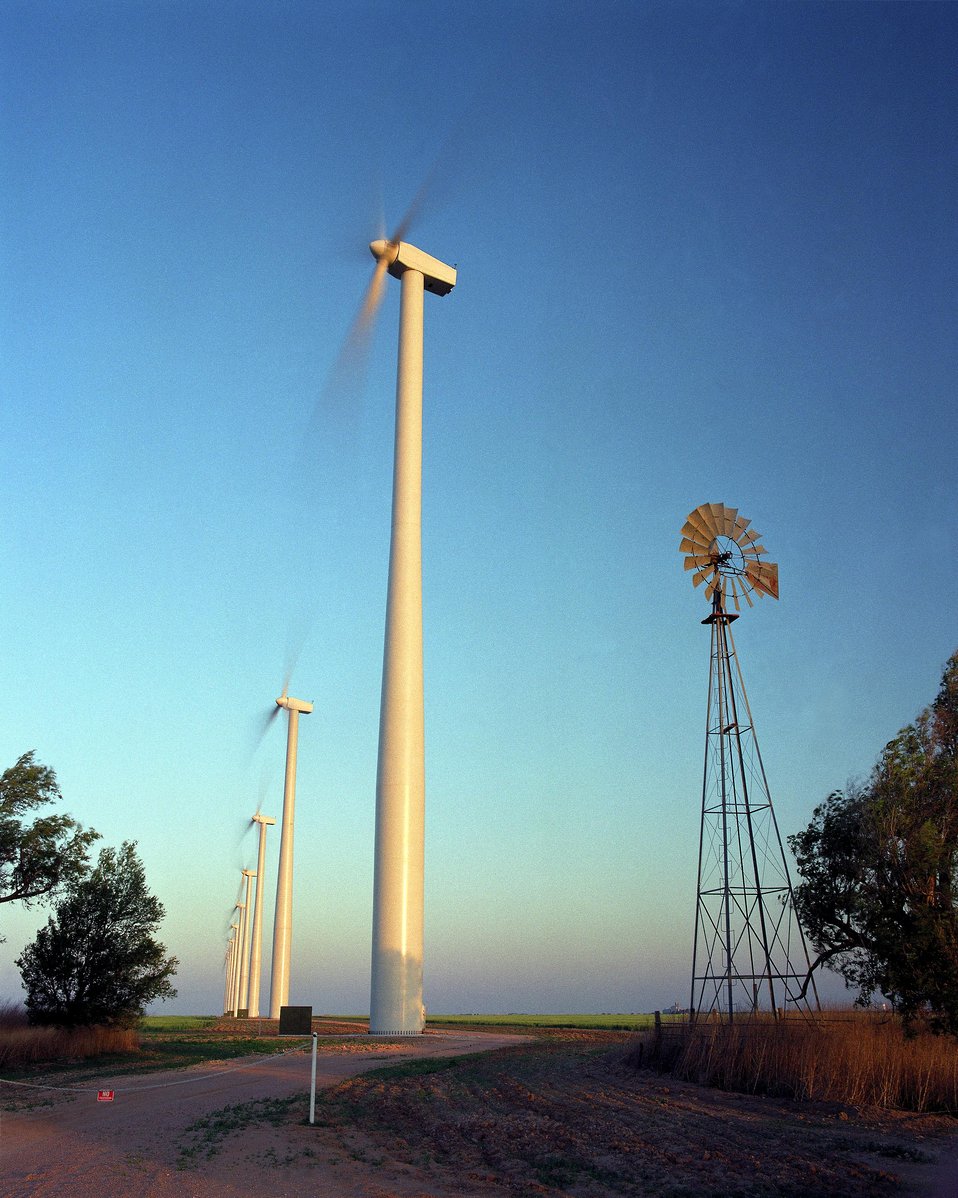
WIND FARM IN KANSAS DURING SUNRISE.